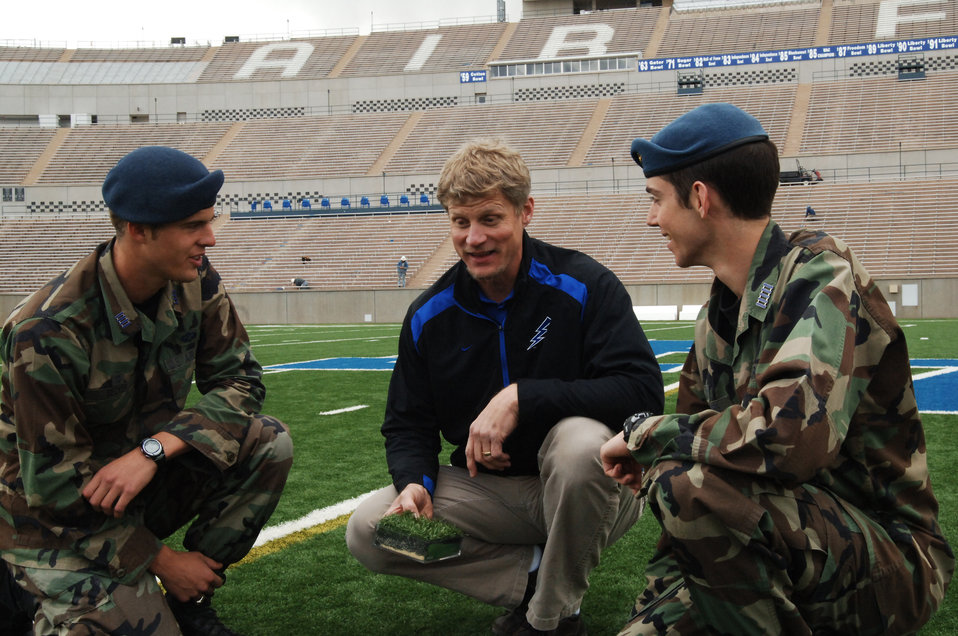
Cadet research benefits Falcon Stadium

Air Force Academy Cadets 1st Class Caleb Becker (left) and Ben Saunders discuss field conditions with Mike Wehrmann, Falcon Stadium manager, at the Academy's Falcon Stadium April 30, 2010. The three are examining a cross-section of the artificial turf on the field.